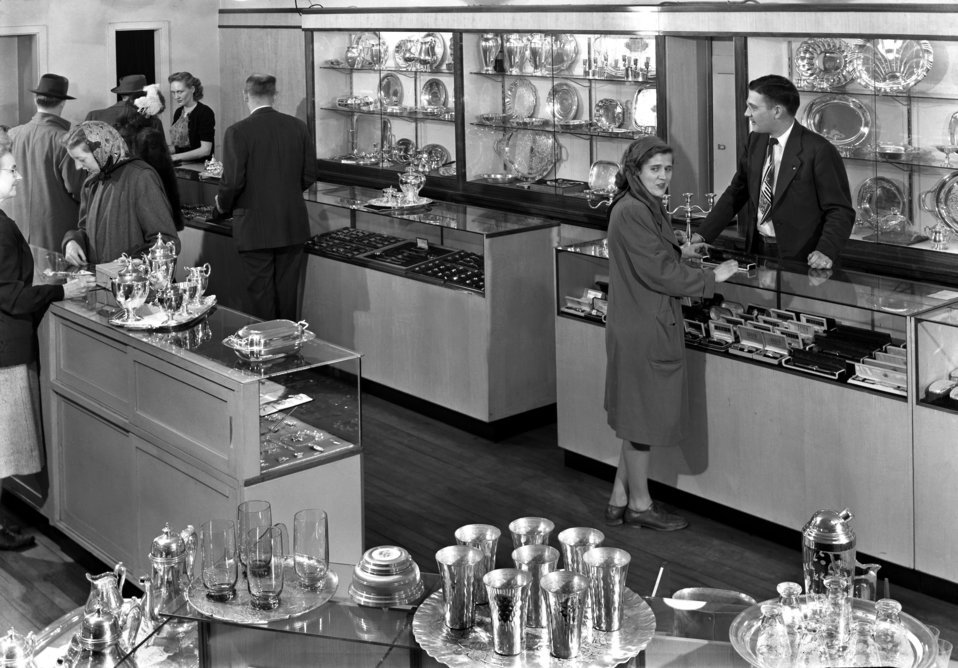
Henebry's Jeweler Oak Ridge 1948

4345-2 DOE photo Ed Westcott 2-4-1948 Oak Ridge Tennessee